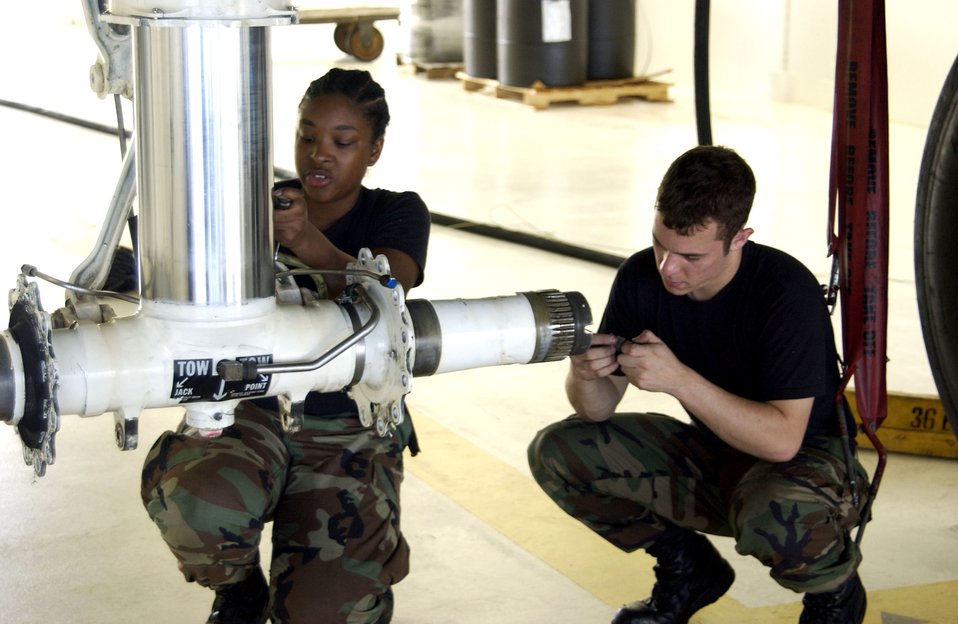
Barksdale Airman take care of B-52 business 7,000 miles away

Airman 1st Class Alacia Lane and Senior Airman Ian Murphy complete a gear repack on the front landing gear of a B-52 Stratofortress deployed to Andersen Air Force Base, Guam. The 36th Expeditionary Aircraft Maintenance Squadron has compiled an impressive 84.2 percent mission capable rate while deployed to Guam, higher than the 76 percent mission standard expected back at the unit's home station at Barksdale Air Force Base, La. The Airmen are deployed with the 36th EAMXS.